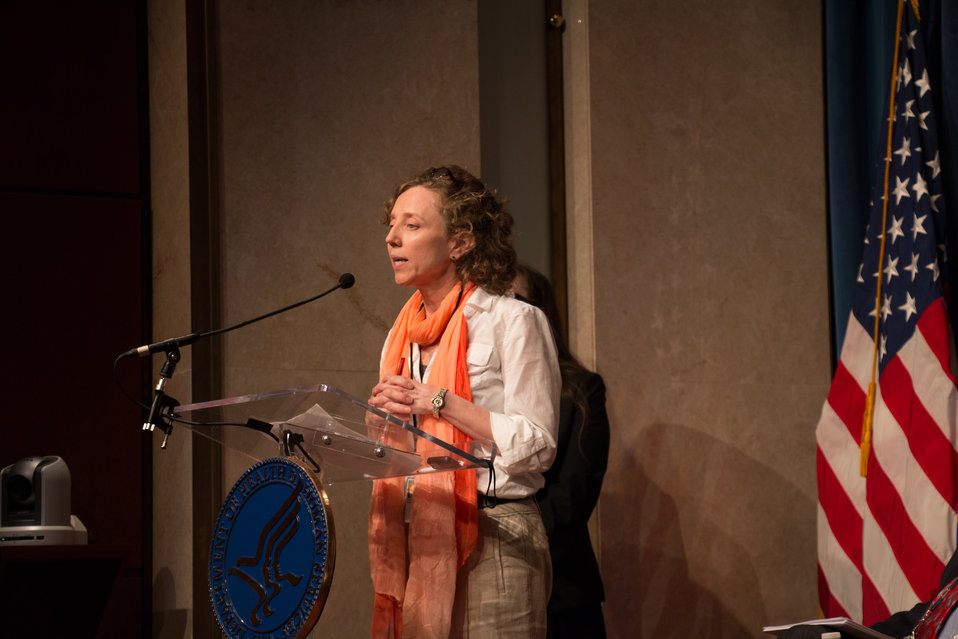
VHAP Launch (233 of 511)